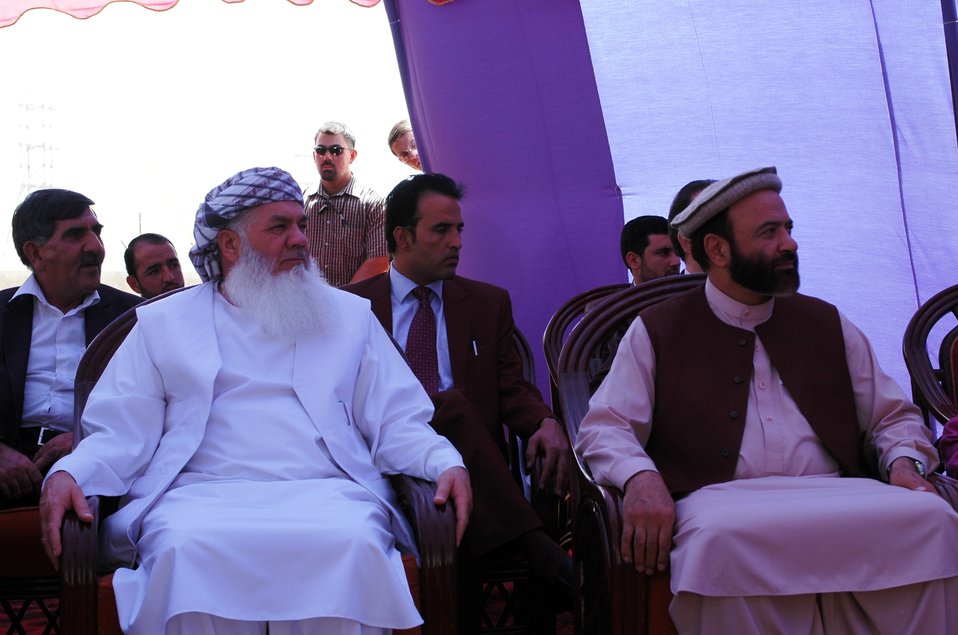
105 MW Tarakhil Power Plant Handover